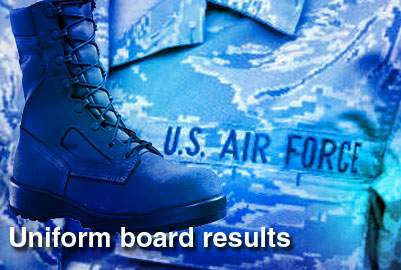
Air Force officials announce uniform policy changes

Air Force officials announced policy modifications resulting from recent Air Force Uniform Board decisions.